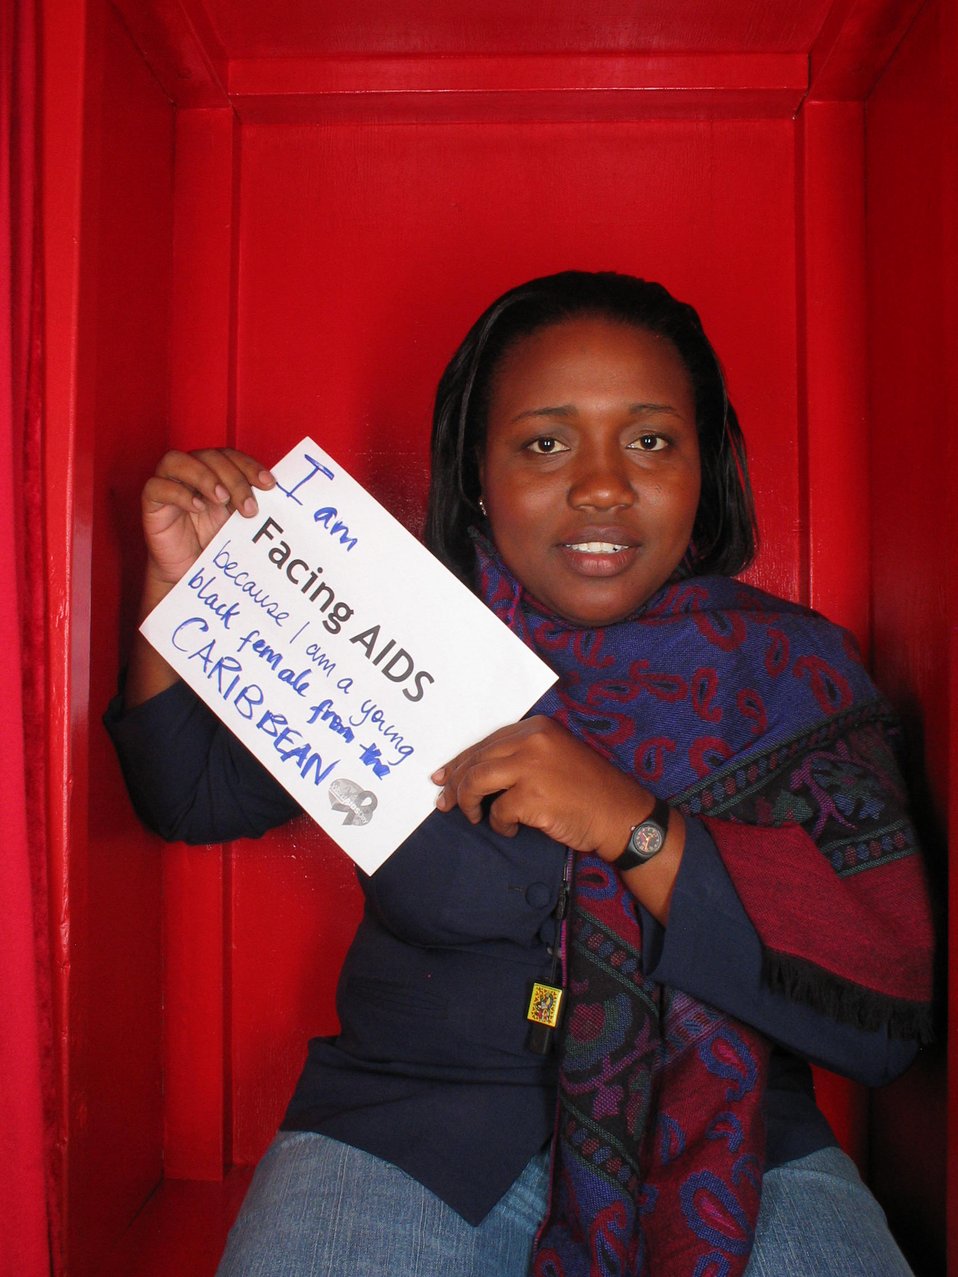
I am Facing AIDS because I am a young black female from the Caribbean